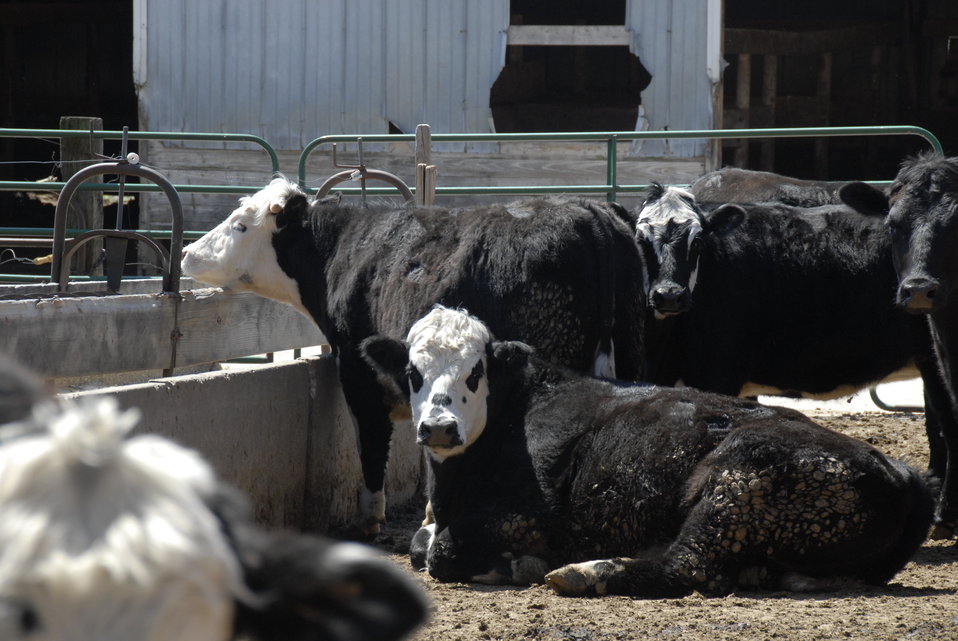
Beef cattle graze in an enclosed area on the Gehrke farm in Elgin, Illinois on April 5, 2008.